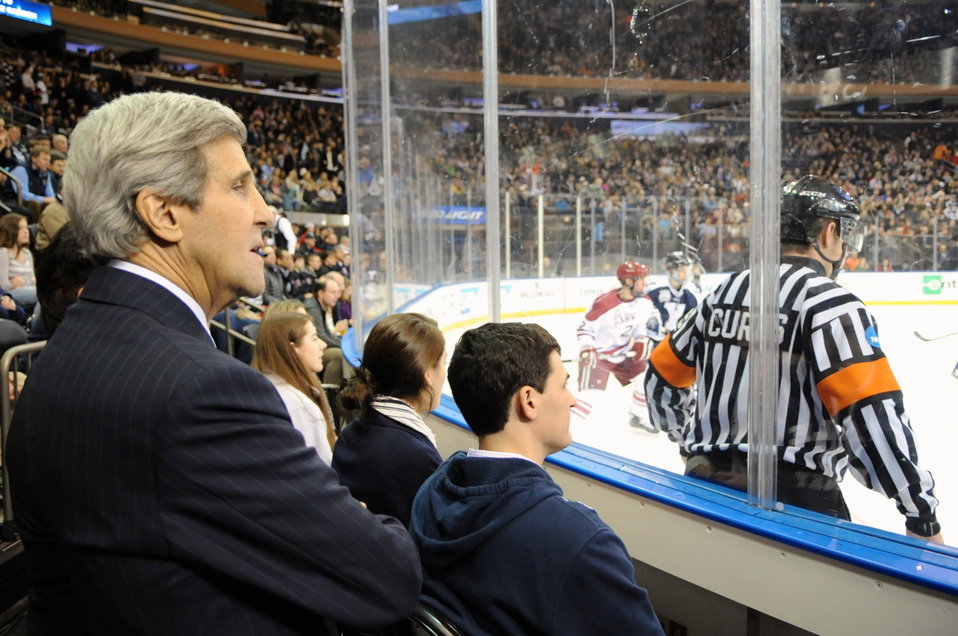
Secretary Kerry Watches Alma Mater Yale Play Harvard in Hockey

U.S. Secretary of State John Kerry watches the Harvard and Yale university men's varsity hockey teams play after participating in the ceremonial puck drop before the two rival university teams played at Madison Square Garden in New York, NY, on January 11, 2014.